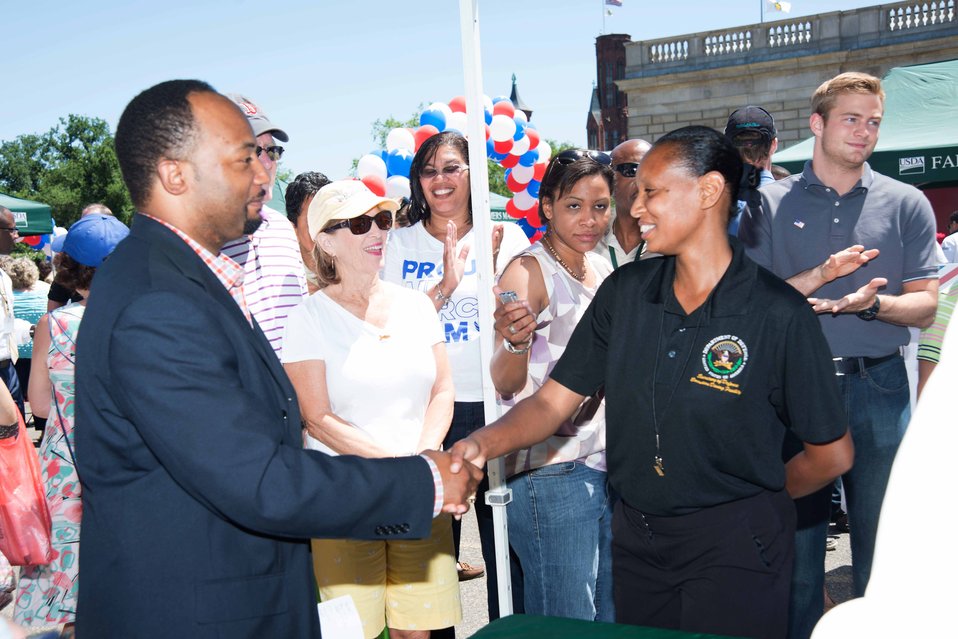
U.S. Department of Agriculture (USDA) Agricultural Marketing Service (AMS) Transportation and Marketing Program Deputy Administrator Arthur Neal congratulates U.S. Army Sergeant (SGT) Monique Sorrell for her win in the Military Barbecue battle on the opening day of USDA’s Farmers Market in the east parking lot of USDA in Washington, D.C. on Friday, Jun. 6, 2014.